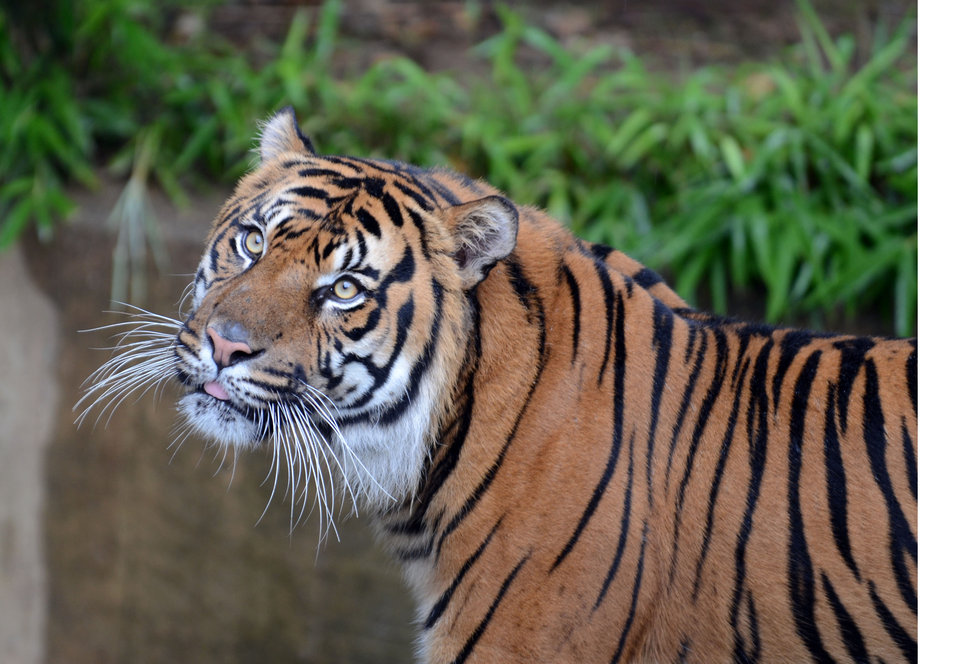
Rare Beauty

A tiger poses for the crowd at the National Zoo in Washington, D.C. (Photo: Frank Kohn/USFWS)

Victory for wildlife! In September, 2011, the Save the Vanishing Species stamp was issued. The fourth of its kind, the semipostal stamp is helping to raise awareness -- and funds -- for wildlife in peril.